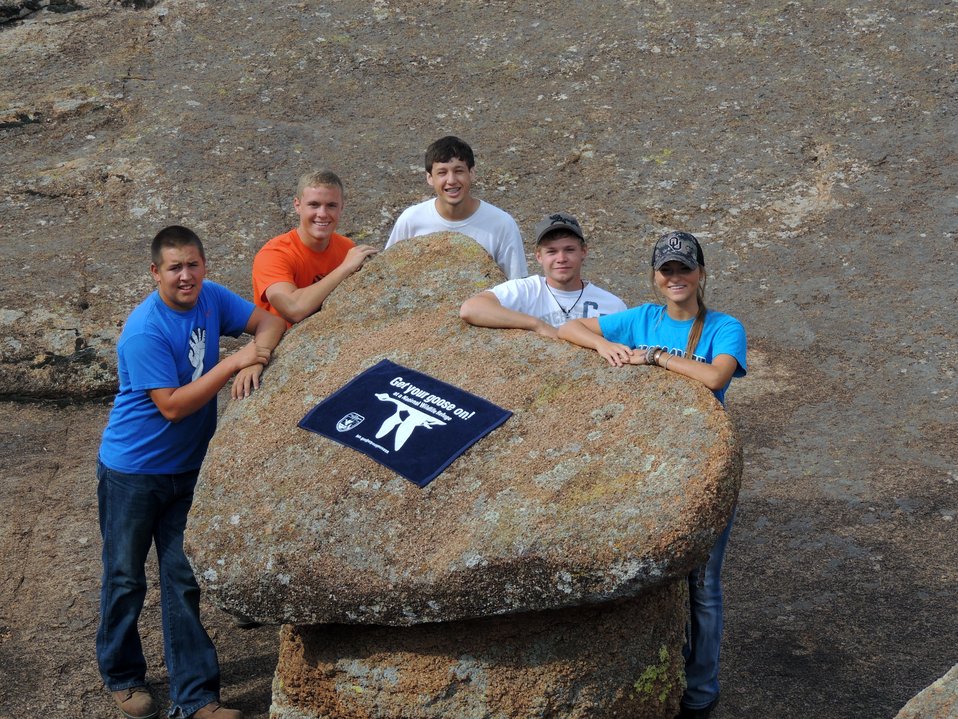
Get Your Goose On!

Wichita Mountains National Wildlife Refuge in Oklahoma.